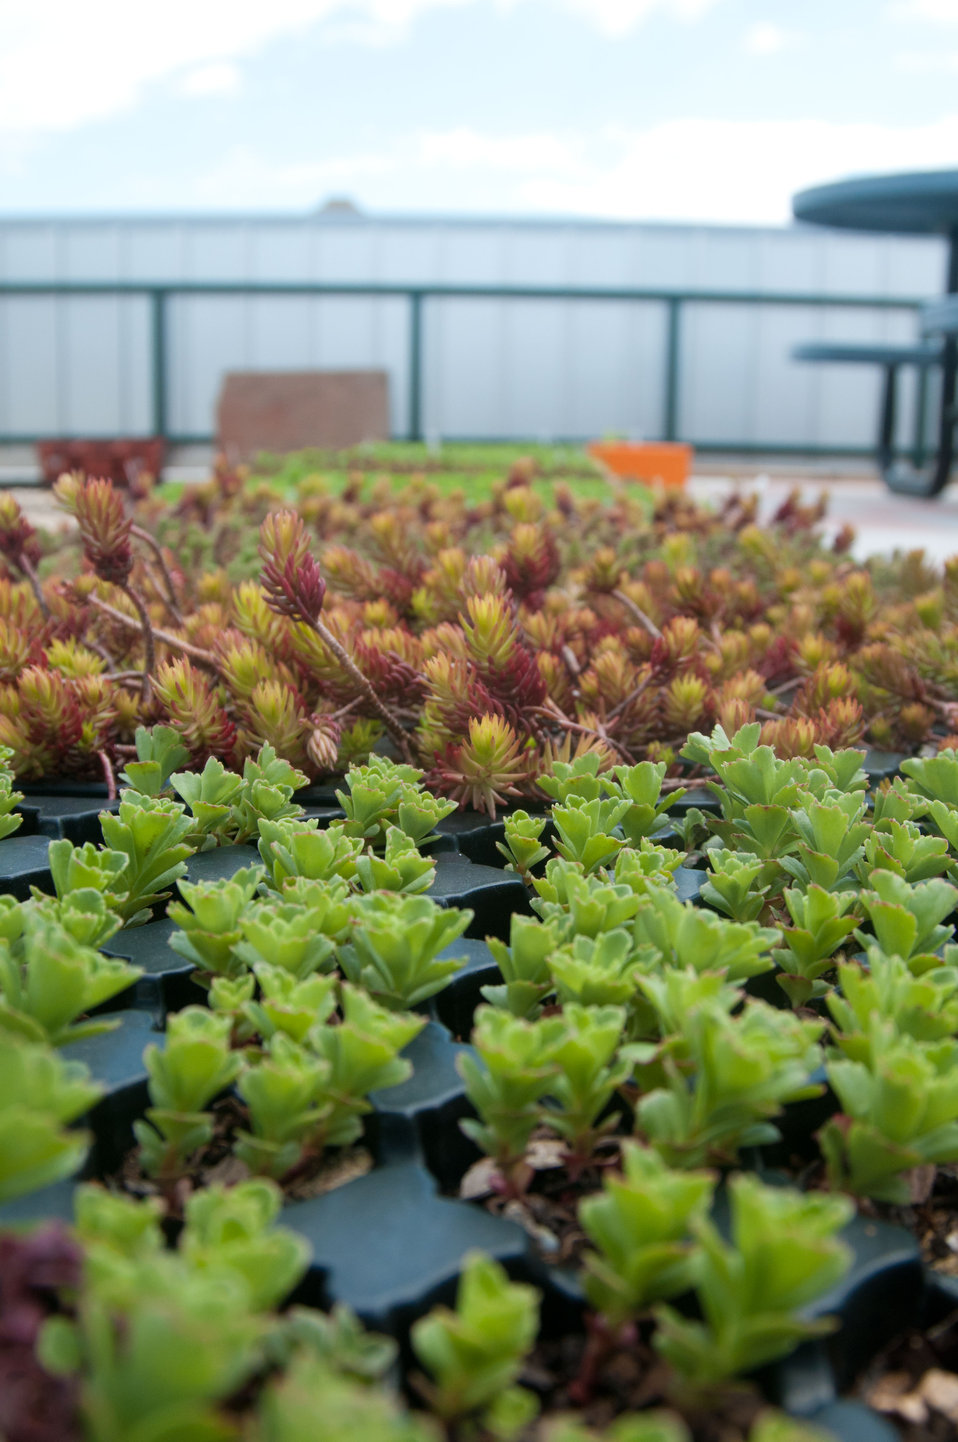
Rooftop vegetable garden is ready for planting at Bread for the City in Northwest Washington, DC, on Friday, April 29, 2011. The garden features specialized soil made of organic and inorganic material for rooftop gardens. The 30 wooden planters are about 4 inches tall but are not separate from the soil covering the roof, so there is a 10' depth to the plant in the boxes. Ground cover plants are already on site and await a team of volunteers to plant them in the walkways to retain moisture and help keep the soil temperature stable. This will be the largest of this kind in the Metro DC area. In addition to supplementing the fresh vegetable given to the community, it will also allow local residents to grown produce that is not normally marketed in this area.